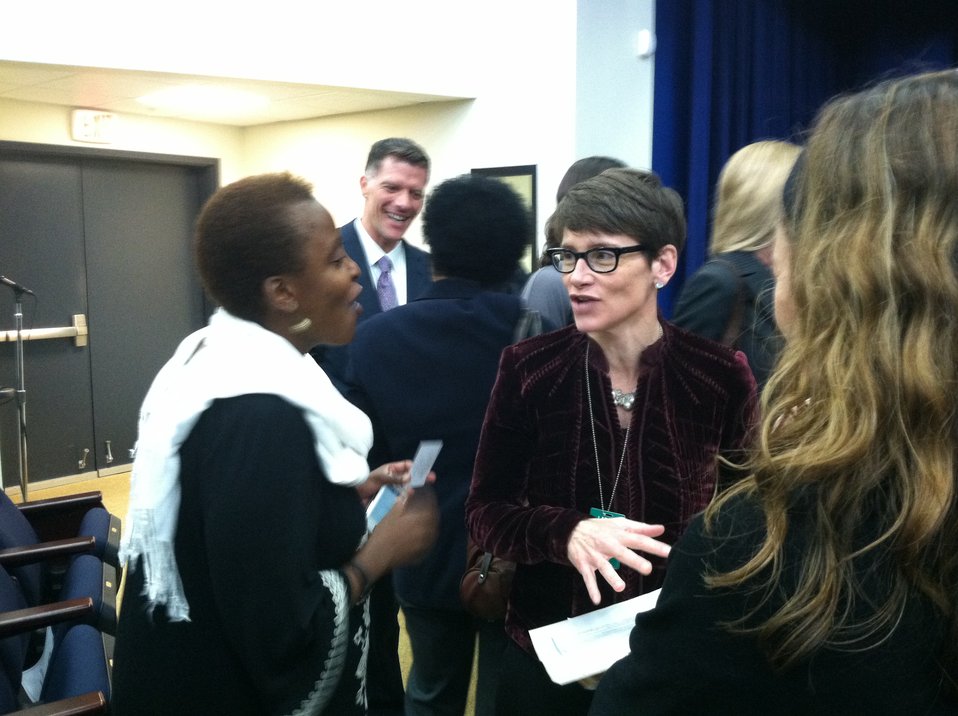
Nancy Mahon and Nduku Kilonzo Director of Liverpool VCT Care and Treatment